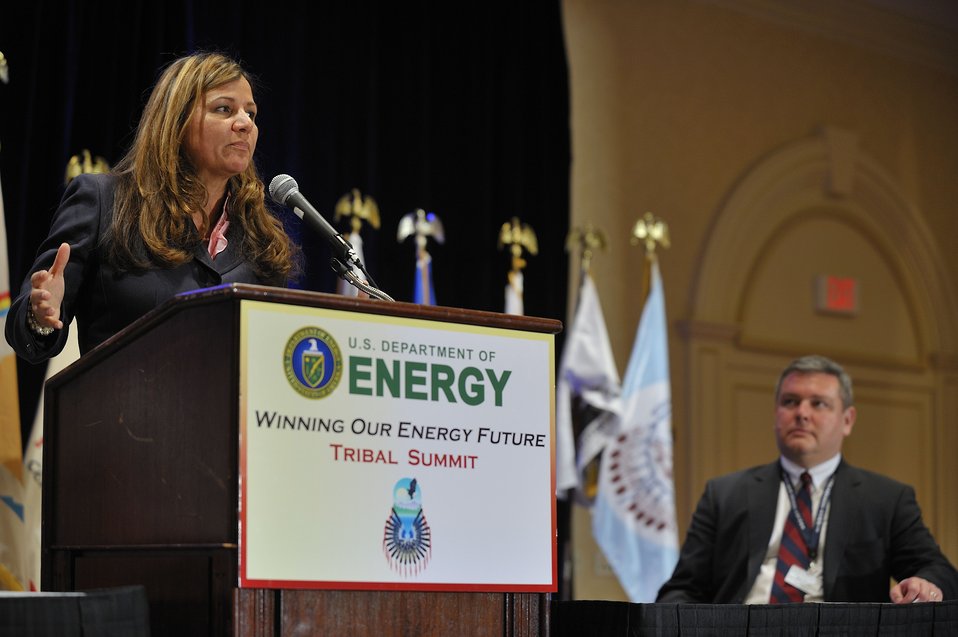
Tribal Energy Summit

Senate Committee on Indian Affairs Majority Staff Director and Chief Counsel, Ms. Loretta Tuell discussed Senator Akaka’s priorities, and DOE Director for Tribal and Intergovernmental Affairs, David Conrad, panel moderator.